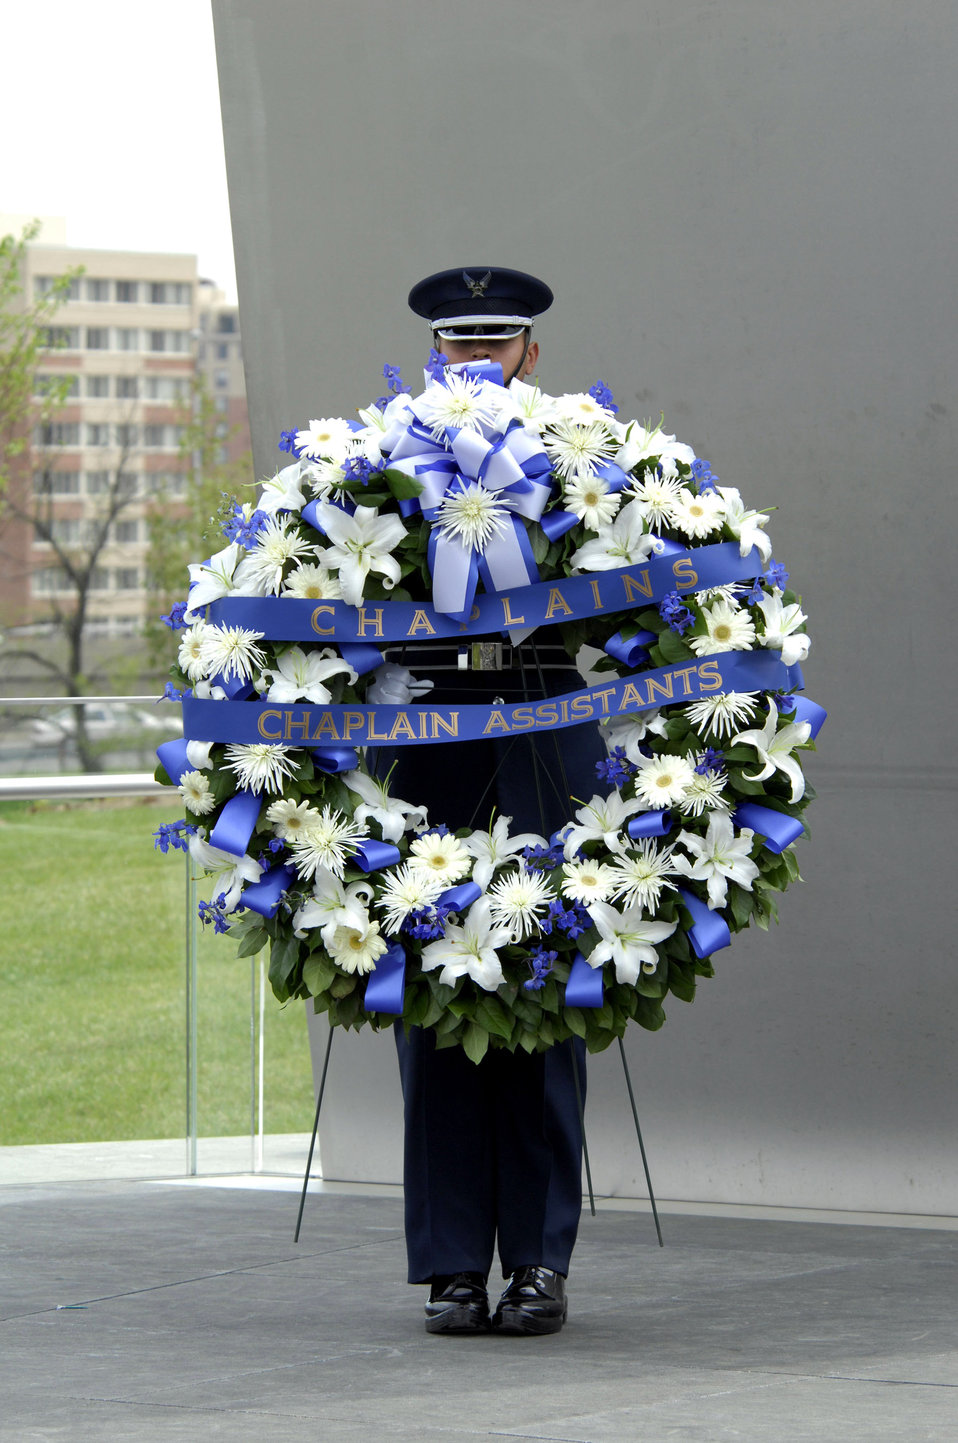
Air Force chaplains join together for memorial service

Airman 1st Class Kirk Campbell holds a wreath April 25 while waiting for a special ceremony to start at the Air Force Memorial in Arlington, Va., to honor chaplains and chaplain's assistants.